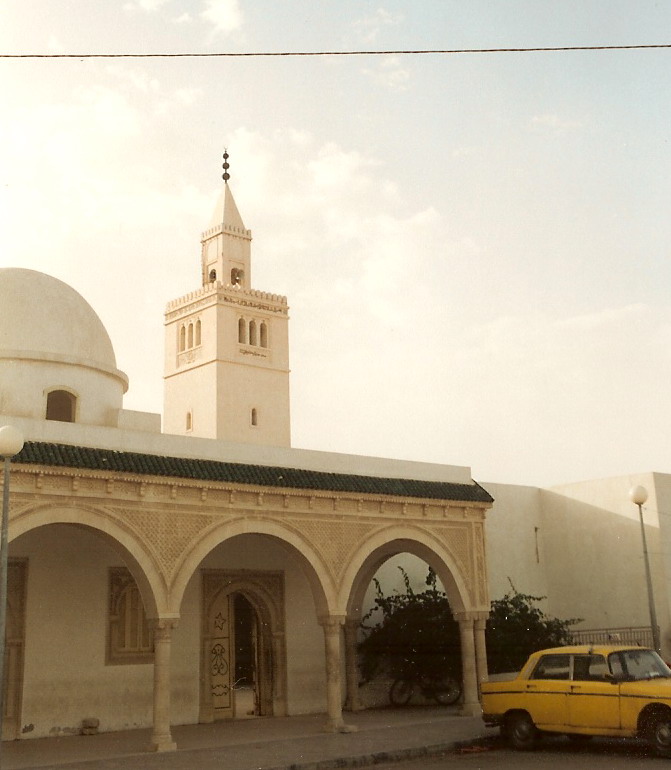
Français : Mosquée à Gabès (Tunisie)